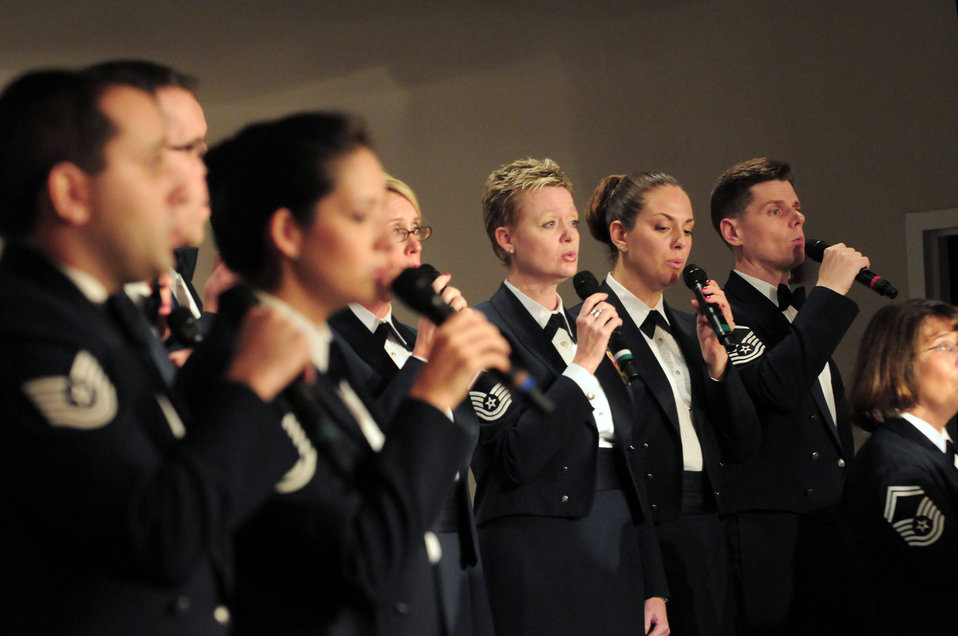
Airmen of Note, the jazz component of the United States Air Force Band, perform at a function Sept. 18, 2009, in Washington D.C. Over the past few weeks, the Airmen of Note's holiday album,